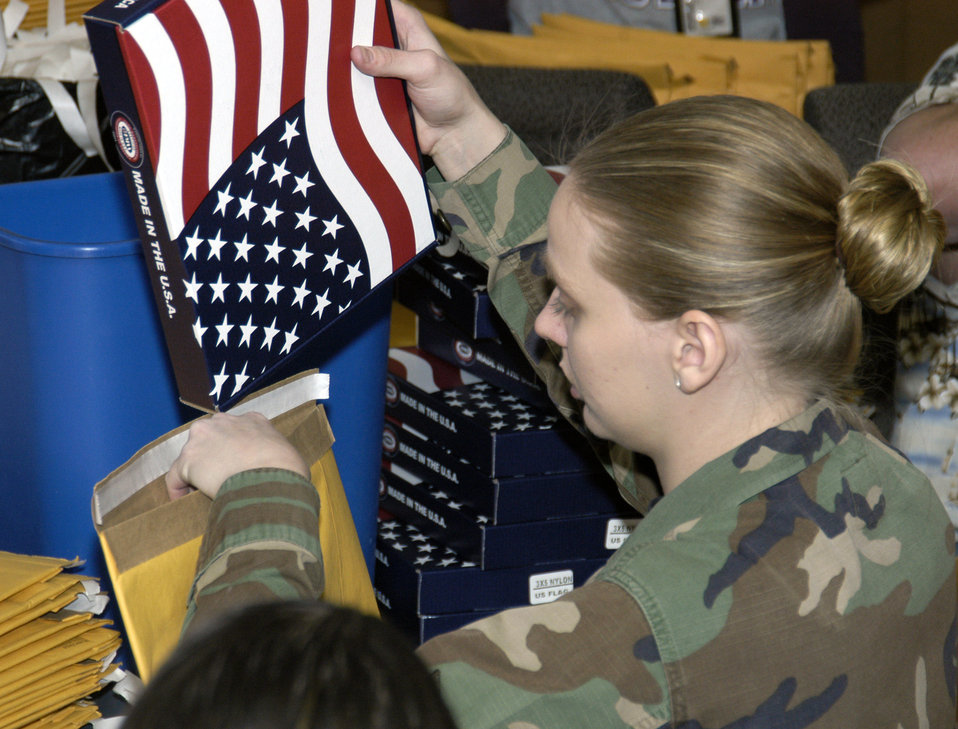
ARPC officials now sending U.S. flags to retiring reservists

Airman Lacey Harrier prepares to mail a U.S. flag April 4 at the Air Reserve Personnel Center in Denver. Flags are sent to retiring reservists who request one through ARPC's online retirement application.